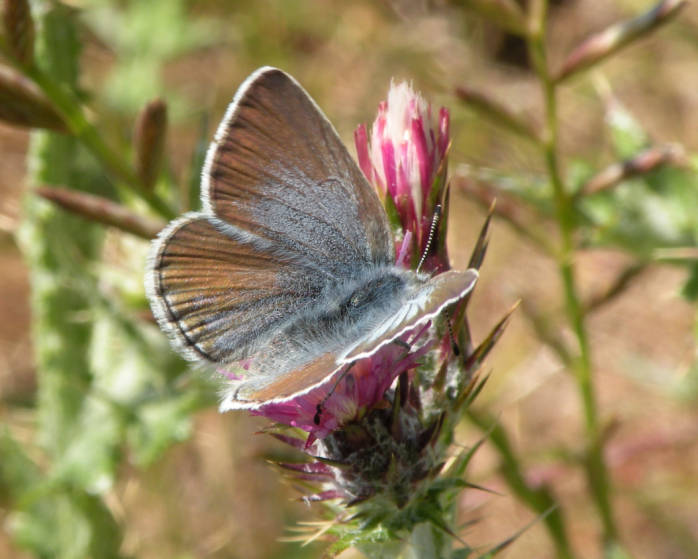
Mission Blue Butterfly (endangered)

Photo credit: Stuart Weiss

A stunning, close-up view of a mission blue butterfly. This species was added to the Endangered Species list on June 8, 1976.